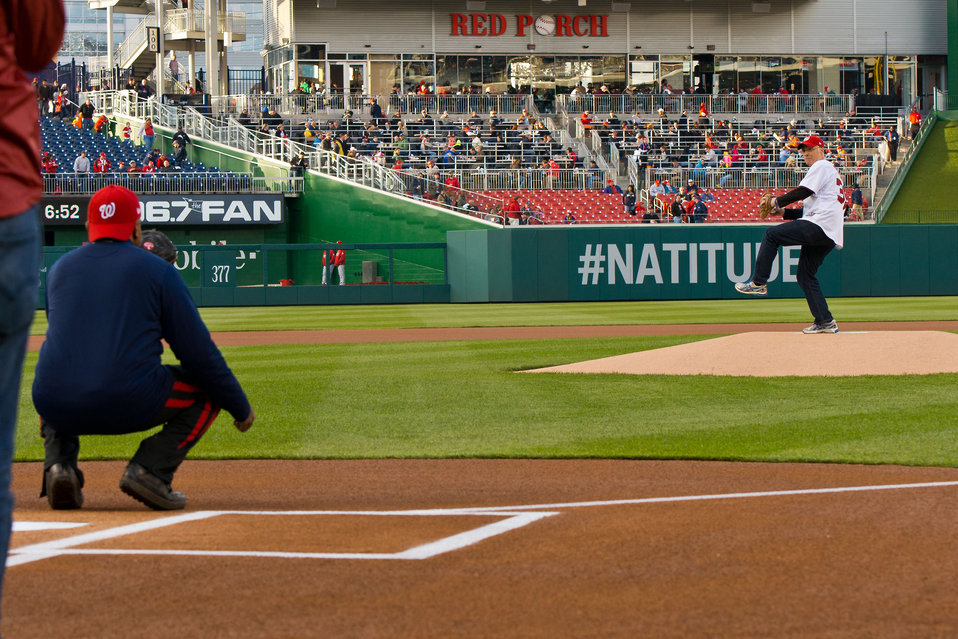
April 22, 2013 – Acting Administrator Bob Perciasepe winds up for the ceremonial first pitch

Before the game, fans were encouraged to score one for the environment by recycling.

Thanks to you, EPA found that in 2011, our country’s recycling and composting efforts prevented 36 million cars-worth of green house gas emissions. Keep it up and learn more!

Keep up with our Acting Administrator @ www.facebook.com/EPAadmin